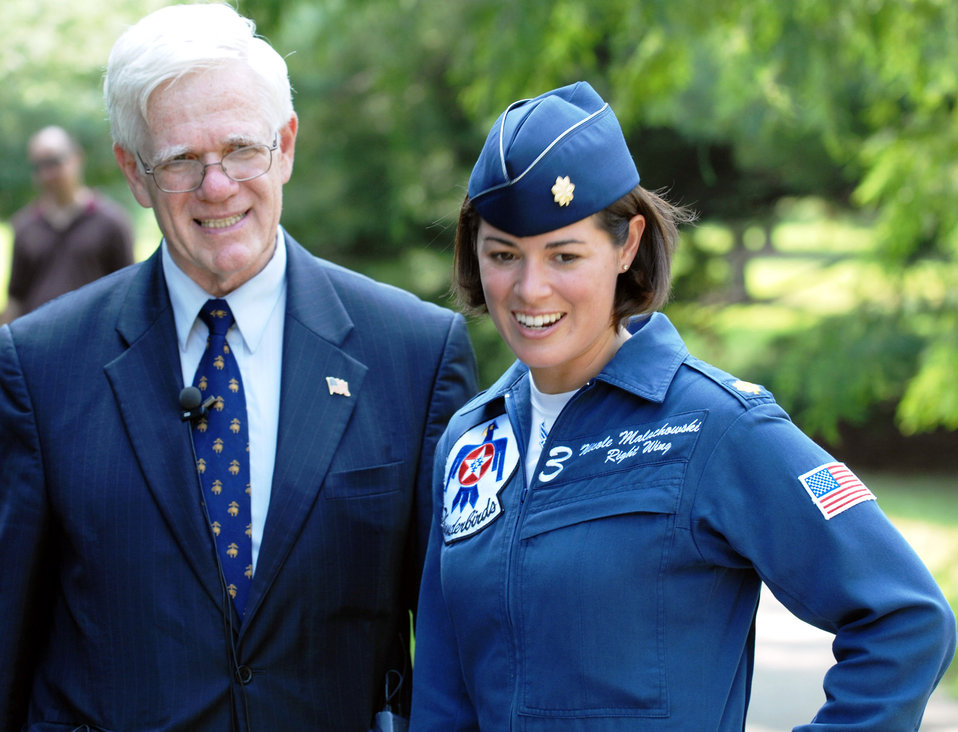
Thunderbird sees the forest for the trees

Dr. Linton Wells and Maj. Nicole Malachowski tour the International Forest of Friends Aug. 4 near Atchinson, Kan. She is first female pilot with the Thunderbirds.